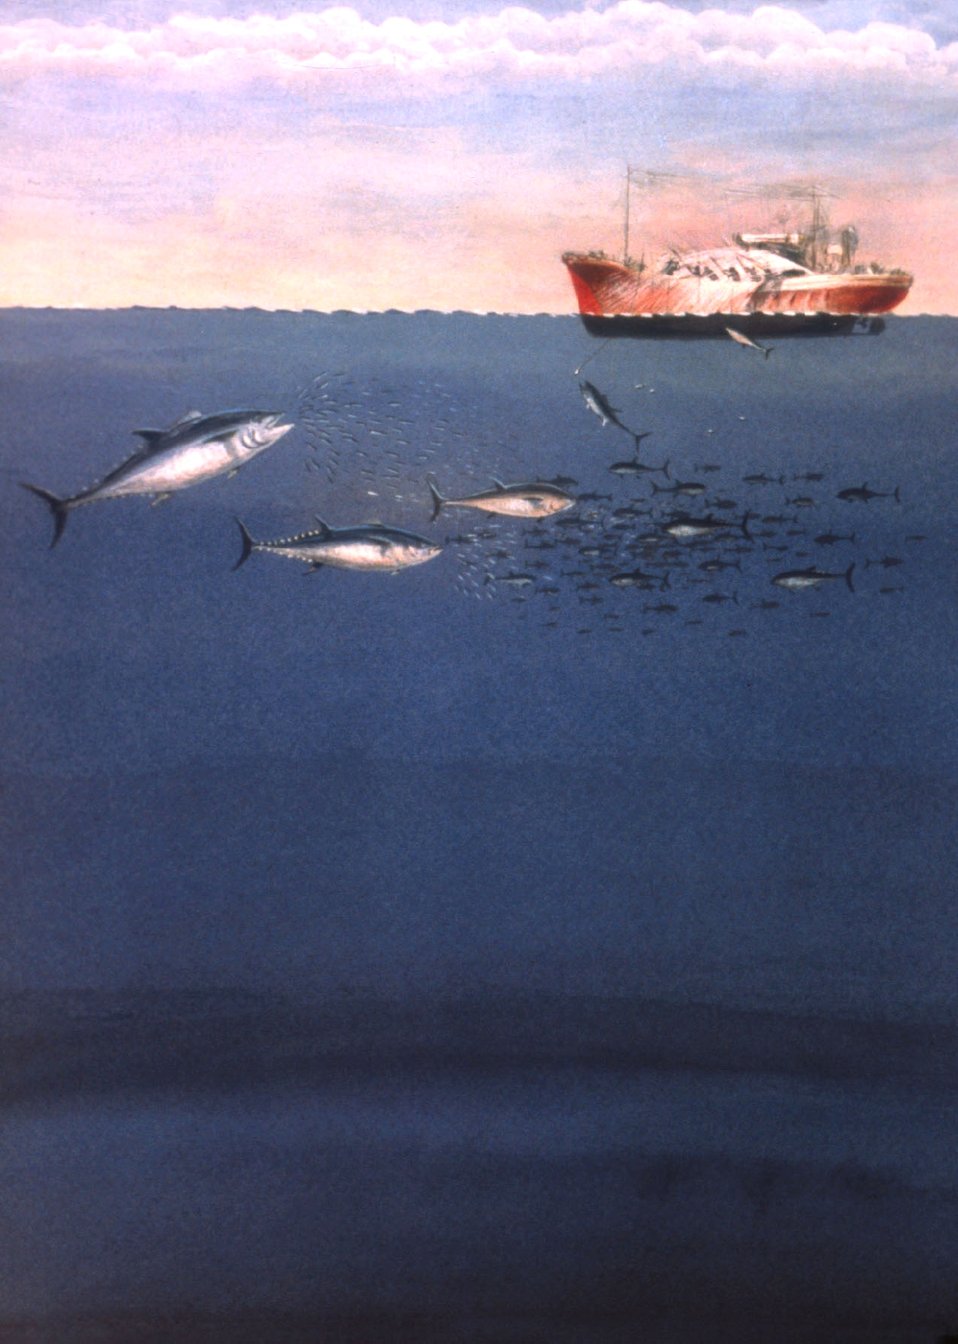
Artist's conception of school of tuna pursuing a school of bait fish while pole and line fishing is being conducted from fishing vessel.